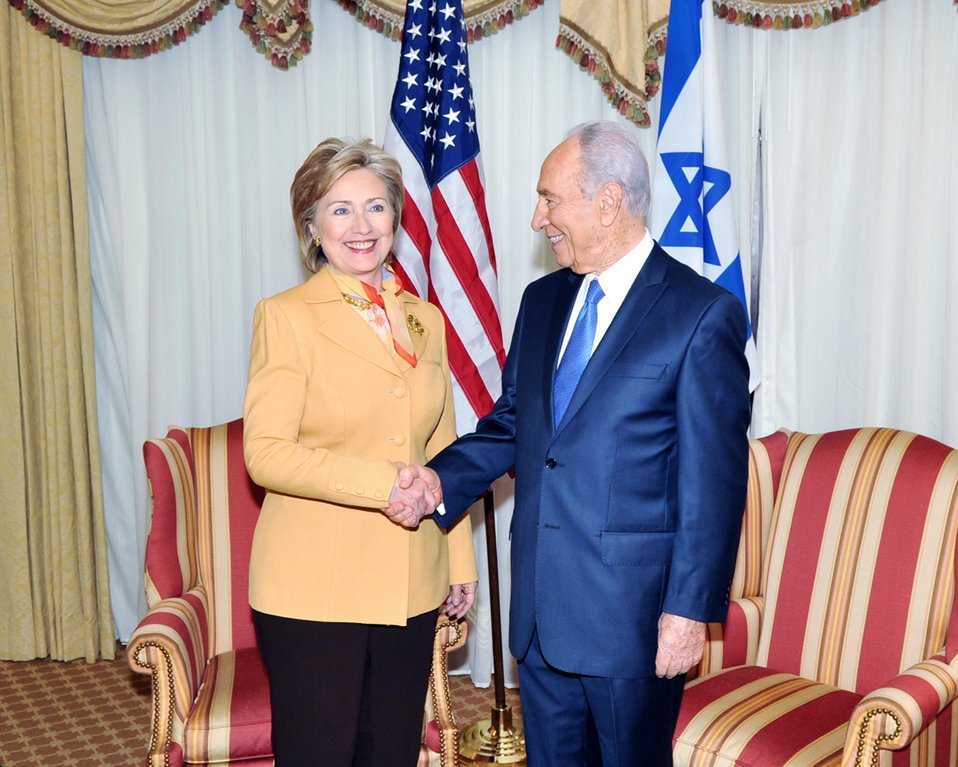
Secretary Clinton Meets With Israeli President

U.S. Secretary of State Hillary Rodham Clinton attends a bilateral meeting with President Shimon Perez of Israel at the Omni Shoreham Hotel in Washington, DC May 5, 2009.